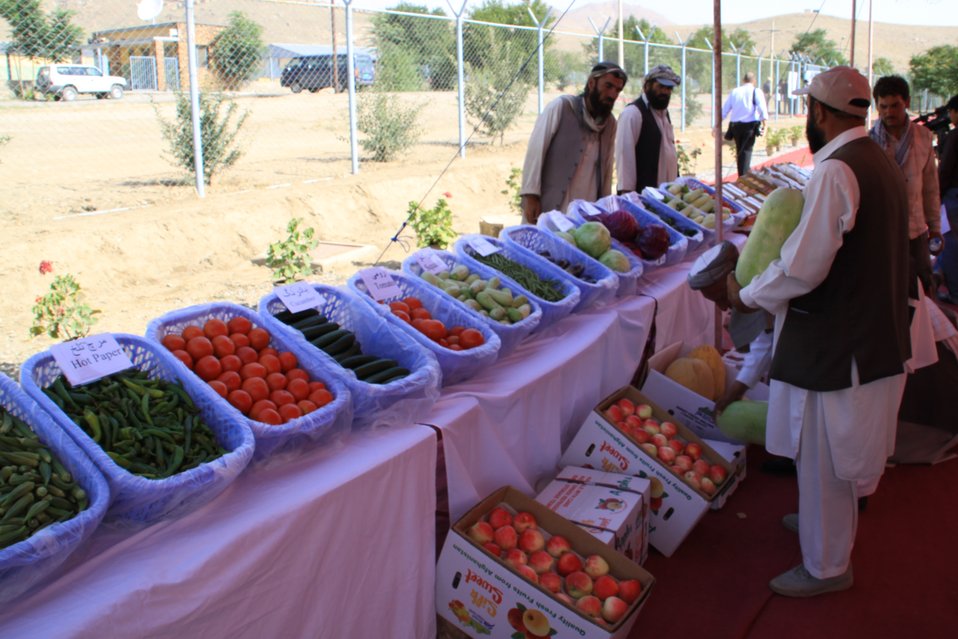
Badam Bagh Farm